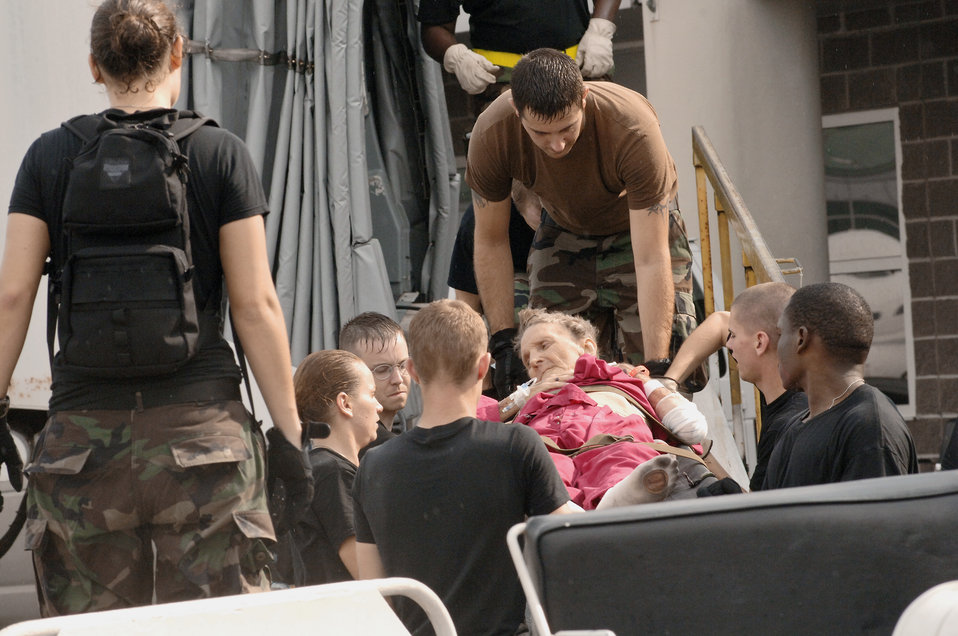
Patients' evacuation

NEW ORLEANS -- Medics from throughout the Air Force, including the 433rd Aeromedical Evacuation Squadron from, Lackland Air Force Base, Texas, and the 375th Medical Group from, Scott Air Force Base, Ill.. evacuate patients from the Louis Armstrong New Orleans International Airport. The medics are part of the Mobile Aeromedical Staging Facility set up at the airport in support of Hurricane Katrina relief operations. Patients leaving here aboard Air Force aircraft will continue to receive medical care from on-board Critical Care Air Transport Teams.